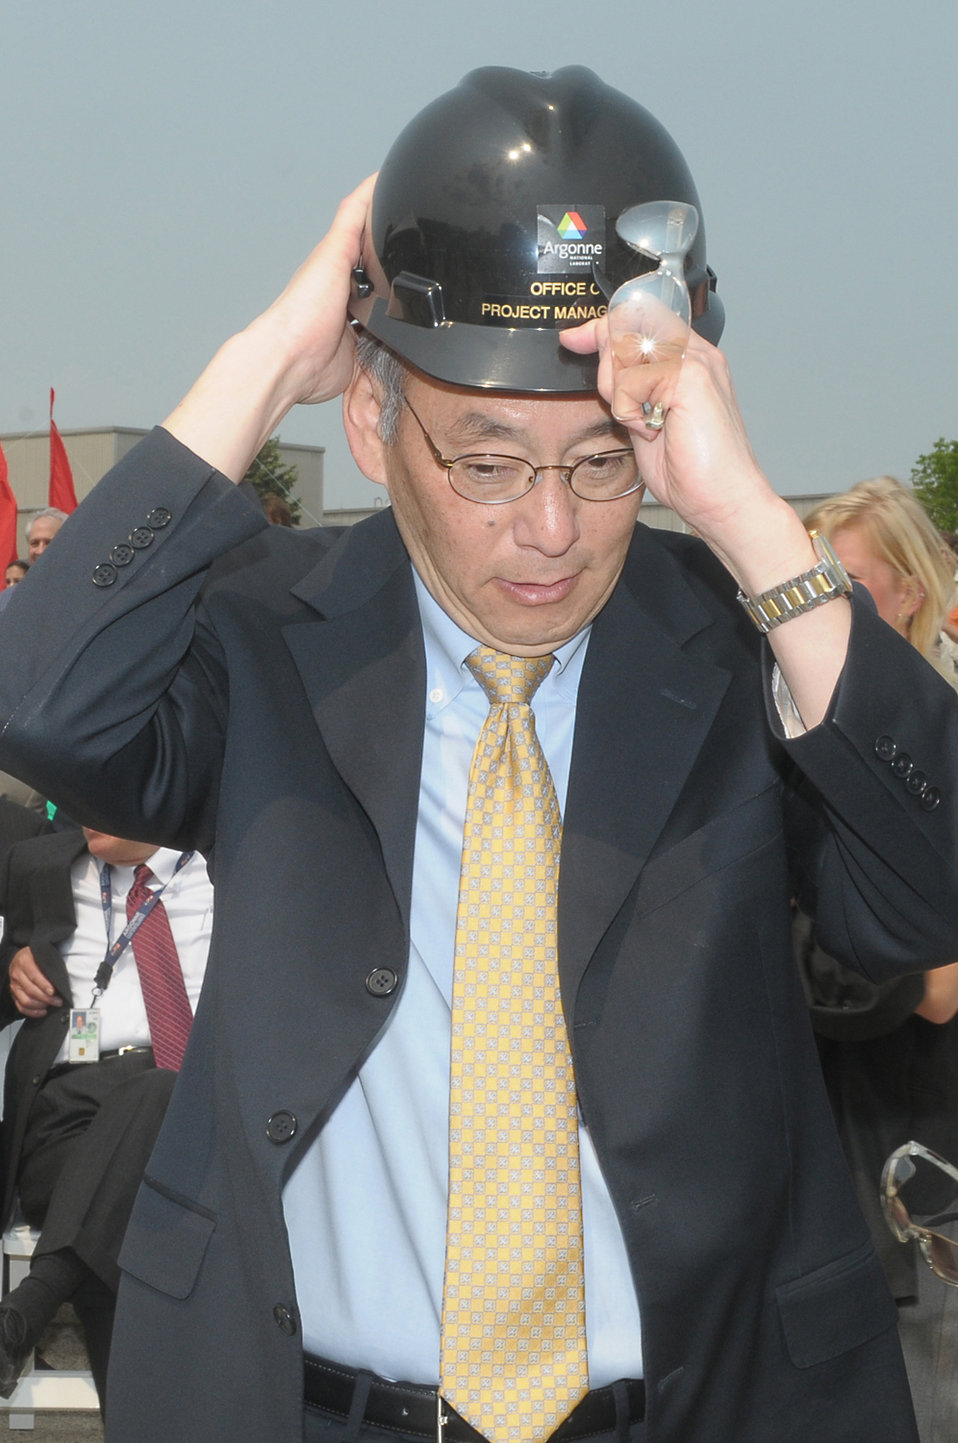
Energy Secretary Steven Chu speaks at the groundbreaking ceremony for Argonne National Laboratory's Energy Sciences Building.
The Energy Sciences building will house some 200 research personnel dedicated to addressing the world's most critical energy challenges. The facility will be key in getting our scientists and engineers to deliver on our mission; doing basic science to generate, supply, transmit, store and use new energy. The building will bring together many different scientists to collaborate and create new knowledge for this new economy. The building is scheduled to be complete in 2013.